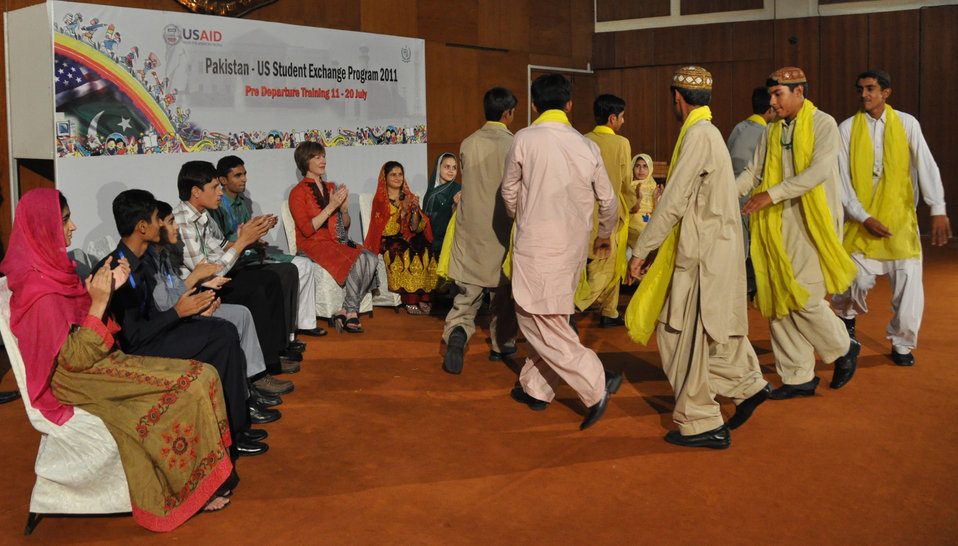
Pakistan-U.S. Student Exchange Program 2011

July 20, 2011: Dr. Marilyn Wyatt, Wife of U.S. Ambassador Cameron Munter discussed with a group of 43 students from all over the country the similarities and differences between the Pakistani and American cultures.
“Our two countries are literally half way across the world from each other,” said Dr. Wyatt during the discussion. “We have very different cultures, languages, and even food. However, we also are very similar: we love our countries, our families, and we are all working to make this world a better place.”
The 43 boys and girls from USAID-supported schools in Balochistan, FATA, and Sindh were participating in a ten-day training workshop organized by the USAID ED-LINKS program at the Allama Iqbal Open University Campus in Islamabad. During this program, 15 to 21 year old students explored cultural commonalities between Pakistan and American culture and values, such as folk music, clothing, food, and history. The program included visits to museums and other cultural sites around Islamabad, as well as a variety of research projects. Students prepared skits based on their learning.